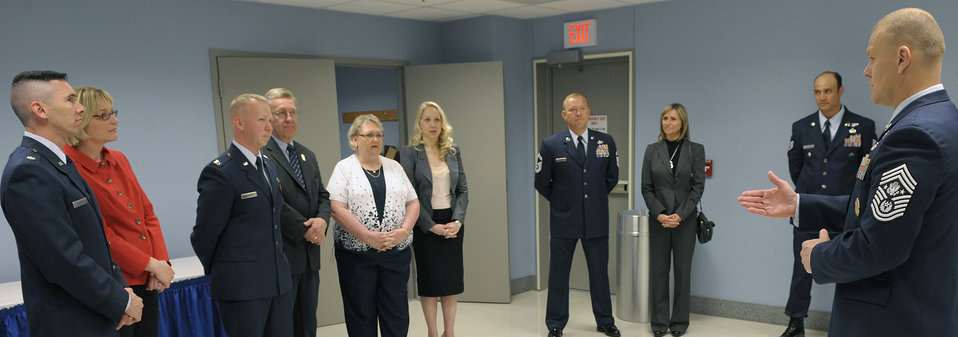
Lance P. Sijan Leadership Award

Chief Master Sergeant of the Air Force James Roy meets with the recipients of the 2009 Lance P. Sijan Leadership Award and their families prior to a presentation ceremony April 21, 2010, in the Pentagon's Hall of Heroes. The award, named for Capt. Lance P. Sijan, a Medal of Honor recipient who served in Vietnam, was created in 1981 to recognize individuals who demonstrate the highest qualities of leadership both in and out of uniform.